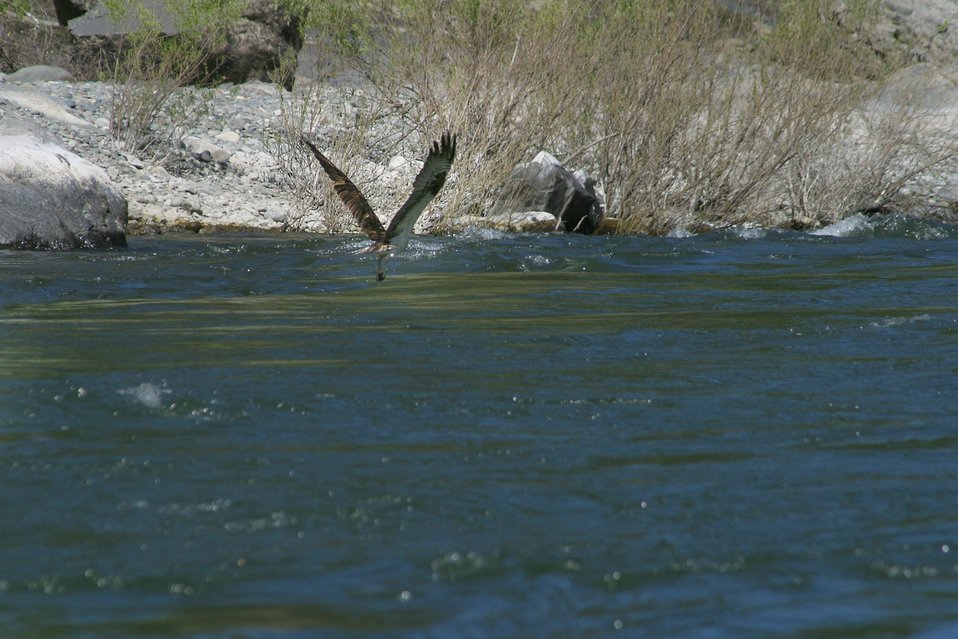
Wild section of the Rogue River from Grave Creek to Foster Bar May 19 to May 22.